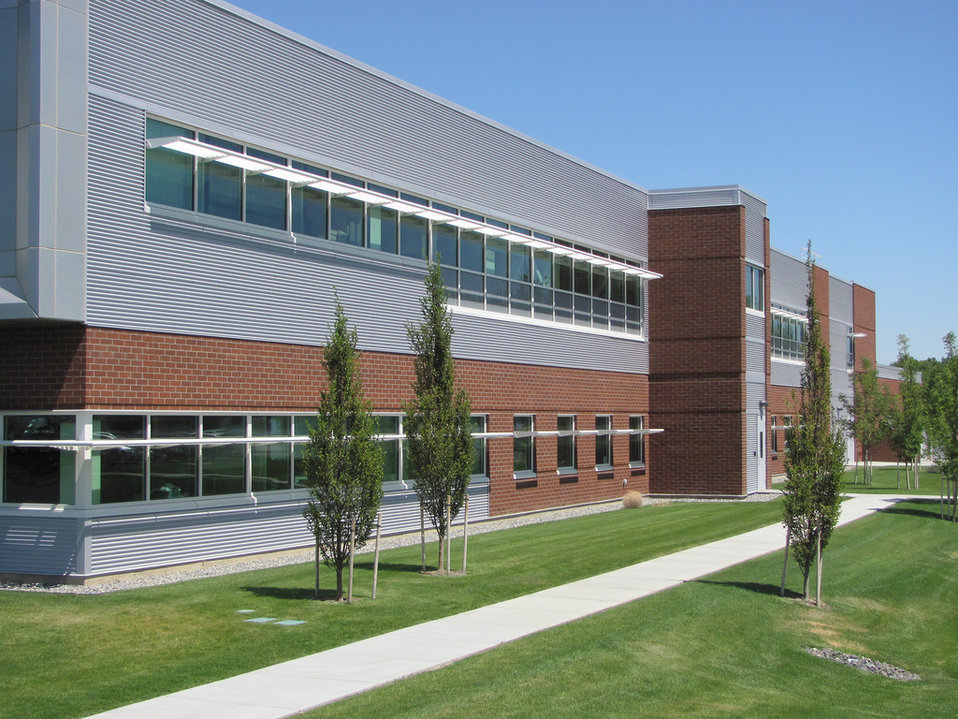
At PNNL, the Biological Sciences Facility and Computational Sciences Facility were dedicated in the Fall of 2009.
The new facilities will enable discoveries in biological, computational and subsurface sciences and developments in bioenergy, carbon sequestration and homeland security.